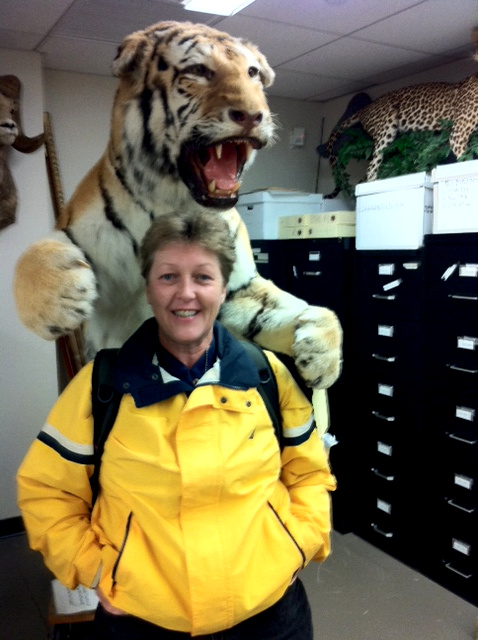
Rita Howard (U.S. Army and California Army National Guard 1983 to 2010) is currently the administrative officer for Region 8 Refuges’ inventory and monitoring program in Sacramento.